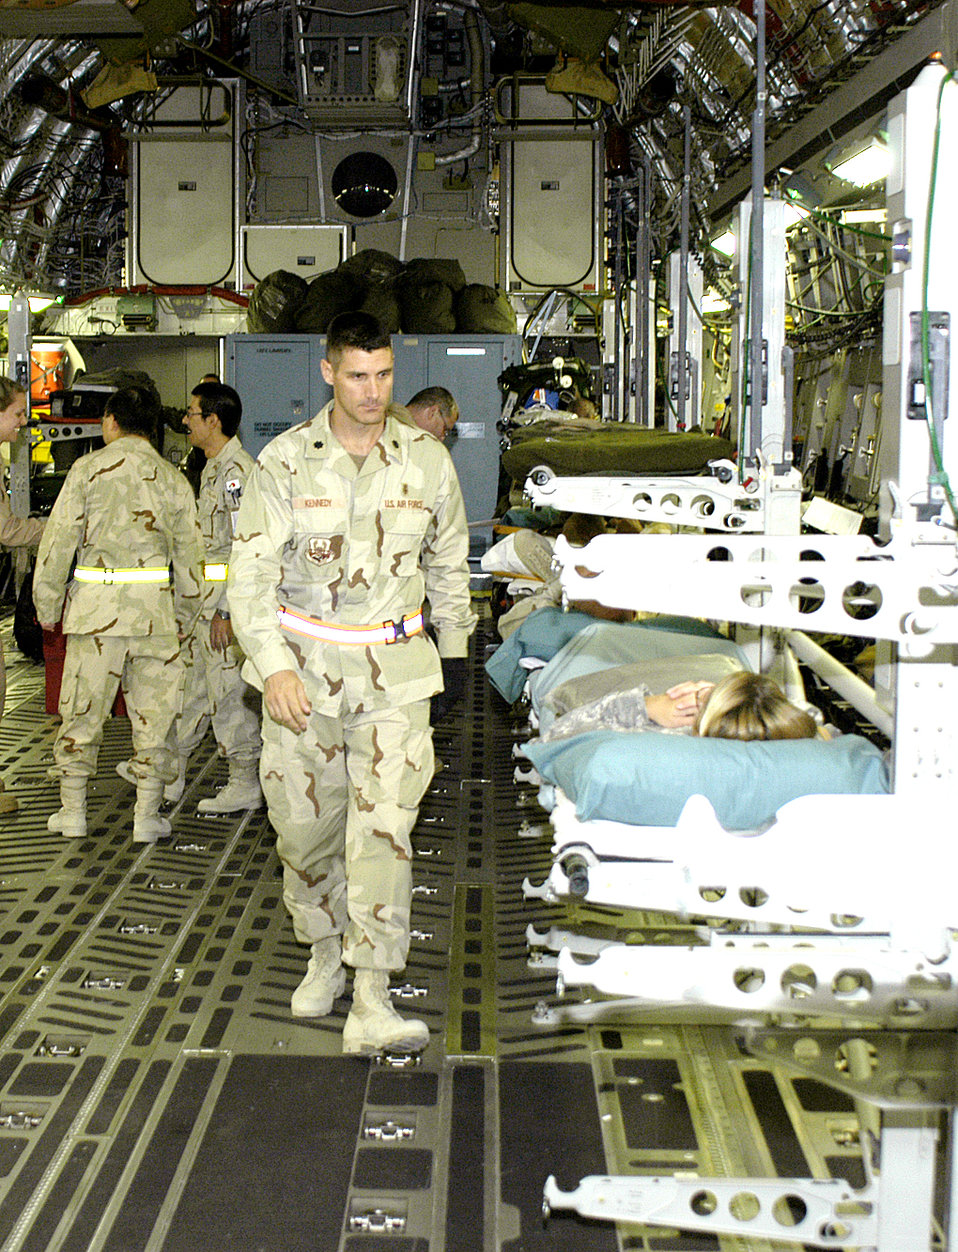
Moving patients

SOUTHWEST ASIA (AFPN) -- Lt. Col. Joe Kennedy checks litter patients before a C-17 Globemaster III medevacs them to Germany. The doctor commands the 386th Contingency Aeromedical Staging Facility at this base. It is one of two staging facilities supporting Operation Iraqi Freedom.